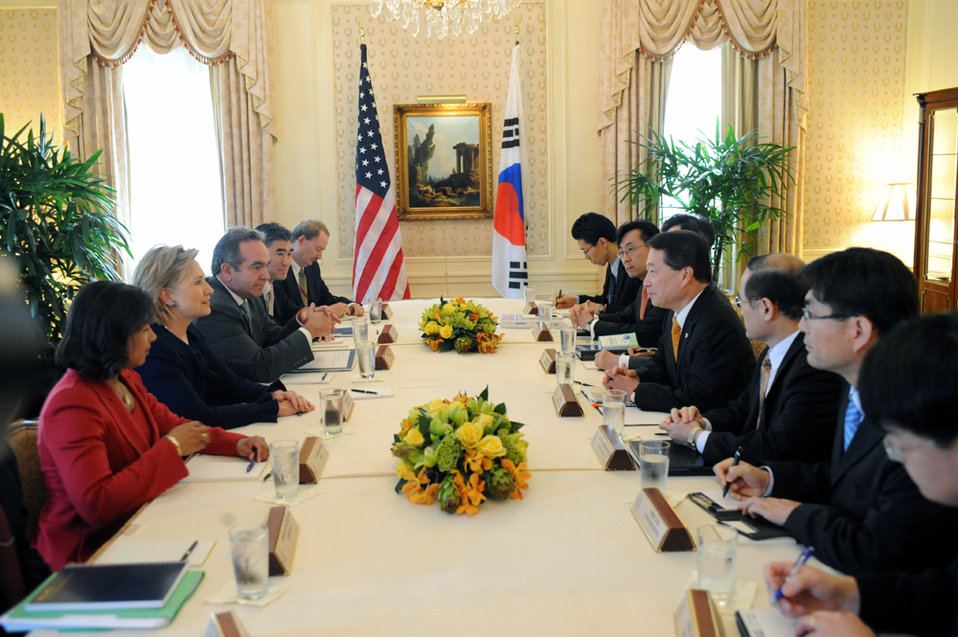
UNGA 2009: Secretary Clinton Meets With South Korean Foreign Minister

U.S. Secretary of State Hillary Rodham Clinton meets with South Korean Minister of Foreign Affairs and Trade Yu Myung-hwan at the Waldorf Astoria hotel during the 64th Session of the UN General Assembly in New York City, New York September 21, 2009.